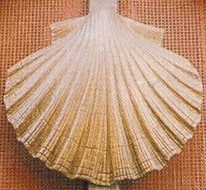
08 Coquille